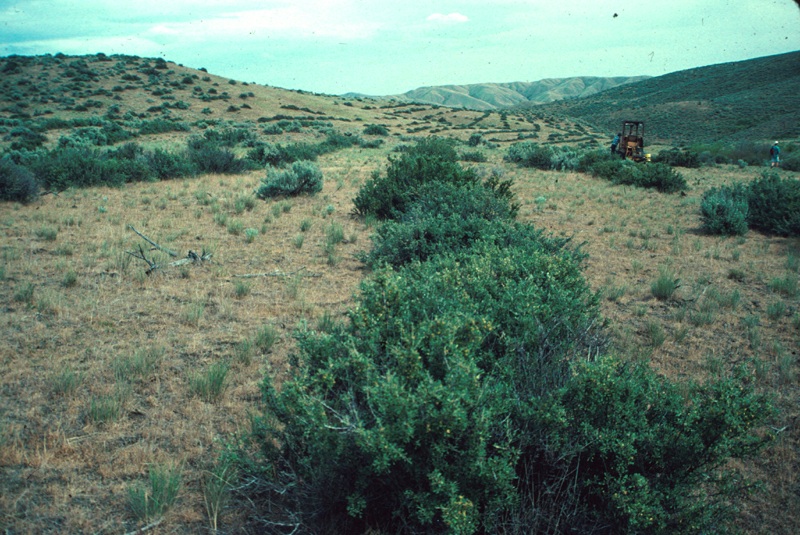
Range Restoration Project Lower Snake River District